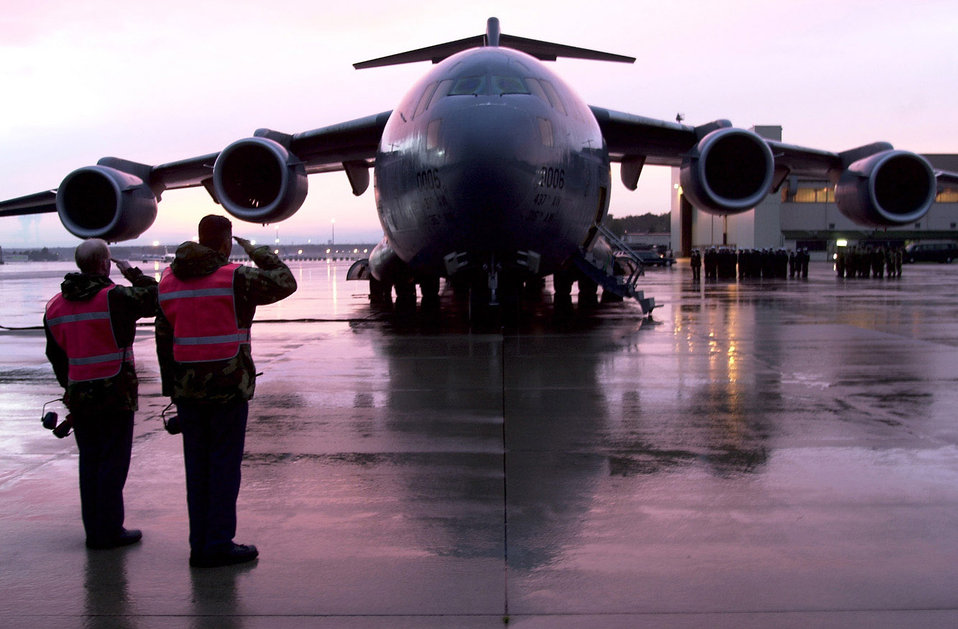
Sailors Returned Home

AMSTEIN AIR BASE, Germany -- Two flightline personnel at Ramstein Air Base, Germany, pay their last respects to the five sailors killed in an apparent attack on the USS Cole as they are escorted from the C-17 Globemaster III that arrived from Yemen. The Navy destroyer was in the port of Aden, Yemen, when the incident occurred.